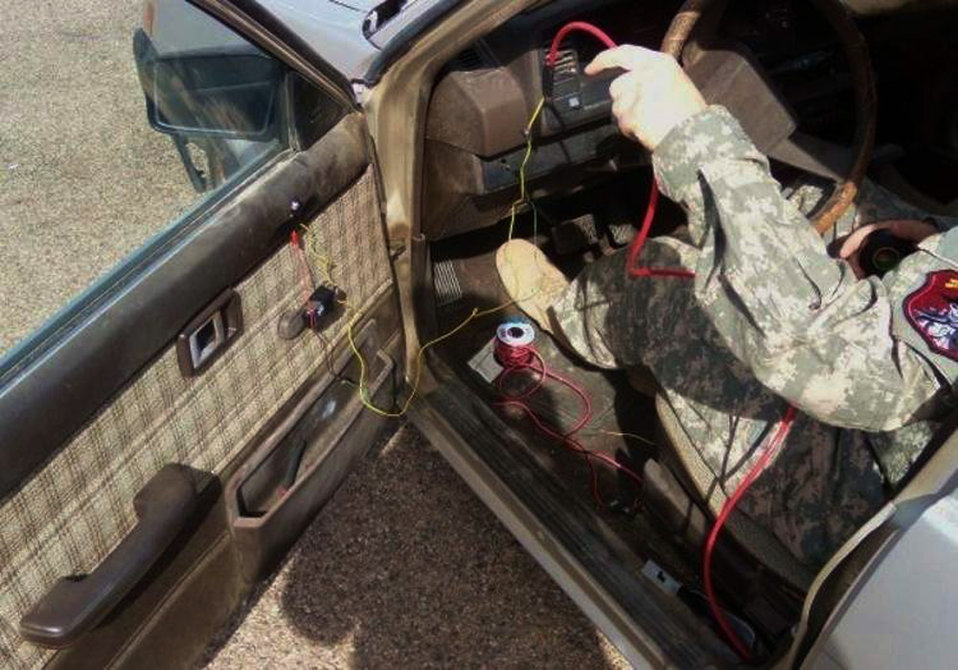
Battlefield detectives fight with fingerprints

A Navy Weapons Intelligence Team member in training transforms a vehicle into a training vehicle borne improvised explosive device during a course March 13 at Fort Huachuca, Ariz. Potential WIT members received training in IED construction, fingerprinting, biometrics, foreign weapons, media exploitation and sensitive sight exploitation.